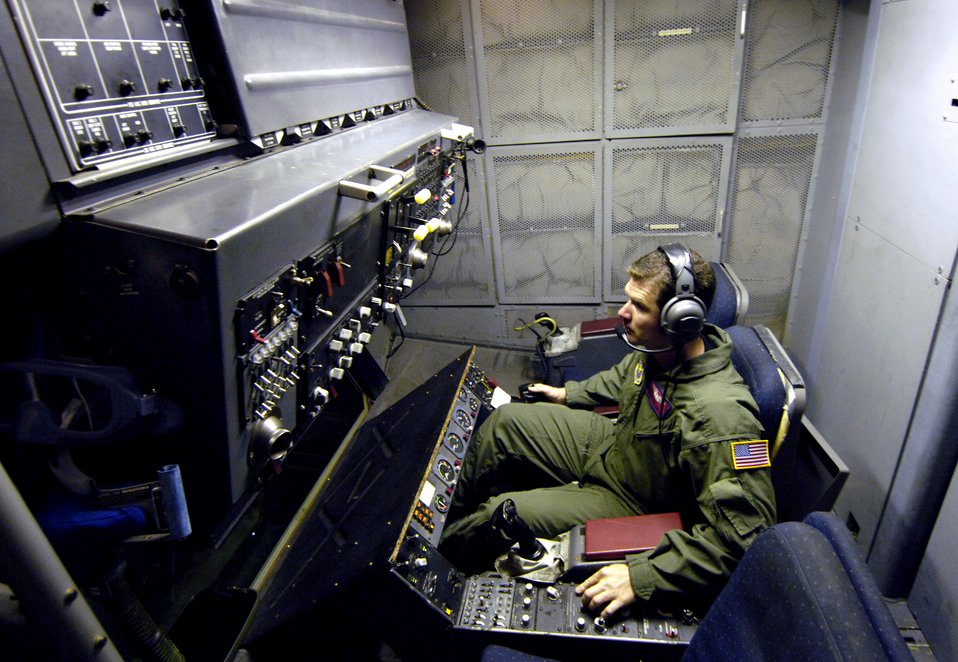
Tankers keep 'em flying at Valiant Shield

Staff Sgt. Michael Hinton performs a preflight check on the refueling controls of a KC-10 Extender at Andersen Air Force Base, Guam, on Wednesday, June 21, during Exercise Valiant Shield. The joint exercise includes more than 300 aircraft, 28 naval vessels and approximately 20,000 service members. Sergeant Hinton is a boom operator with the 9th Air Refueling Squadron at Travis AFB, Calif.